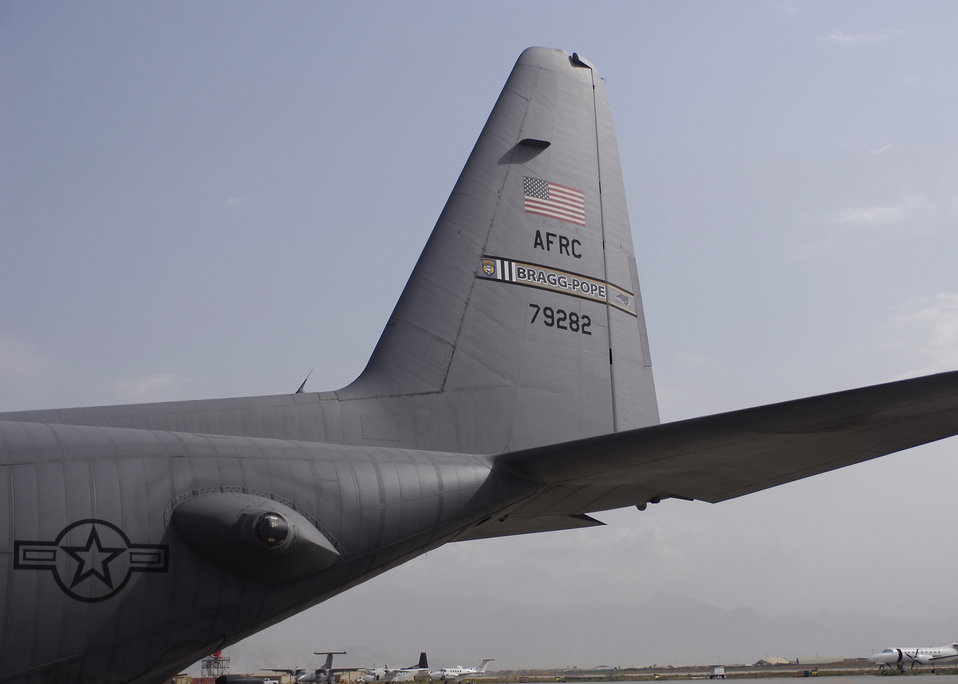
Air Force officials dedicate C-130 to Army's 82nd Airborne in Afghanistan

C-130 Hercules tail number 79282 from the 440th Airlift Wing at Pope Air Force Base, N.C., was dedicated to the Army's 82nd Airborne in honor of the cohesion of the Air Force and the Army in Afghanistan, Oct. 5, 2009, at Bagram Airfield, Afghanistan. The plane sports